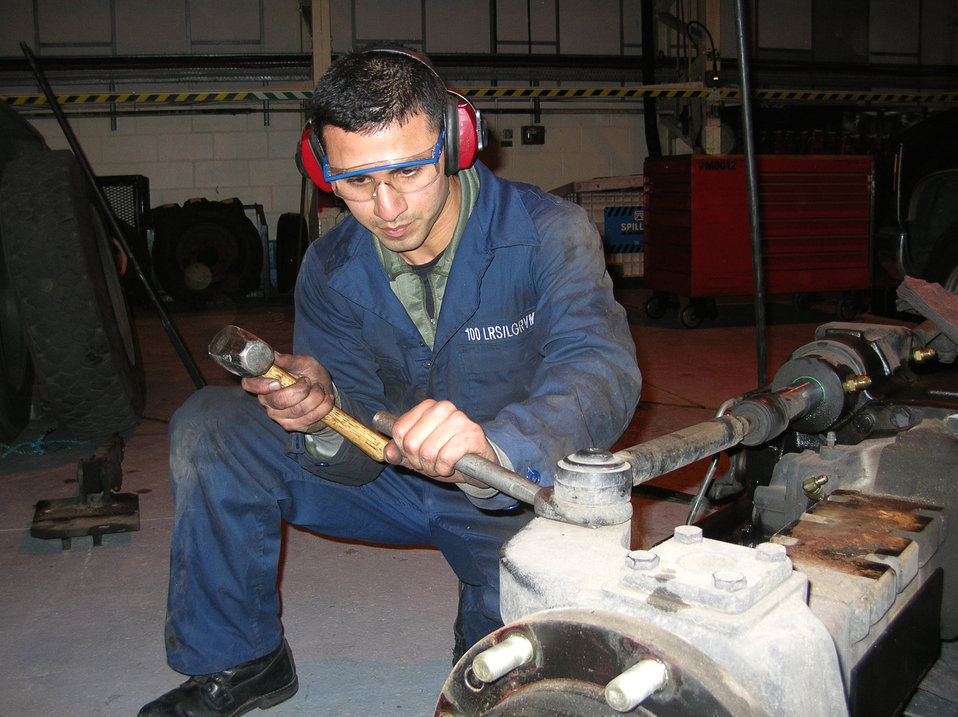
Vehicle maintenance Airmen use AFSO 21 initiatives

Staff Sgt. Oscar Figueroa separates the pieces of a vehicle tow axle Feb. 1 at Royal Air Force Mildenhall, England. He helped develop plans for a new platform the axle sits on while it is being broken down and repaired. Sergeant Figueroa is a vehicle maintainer with the 100th Logistics Readiness Squadron.